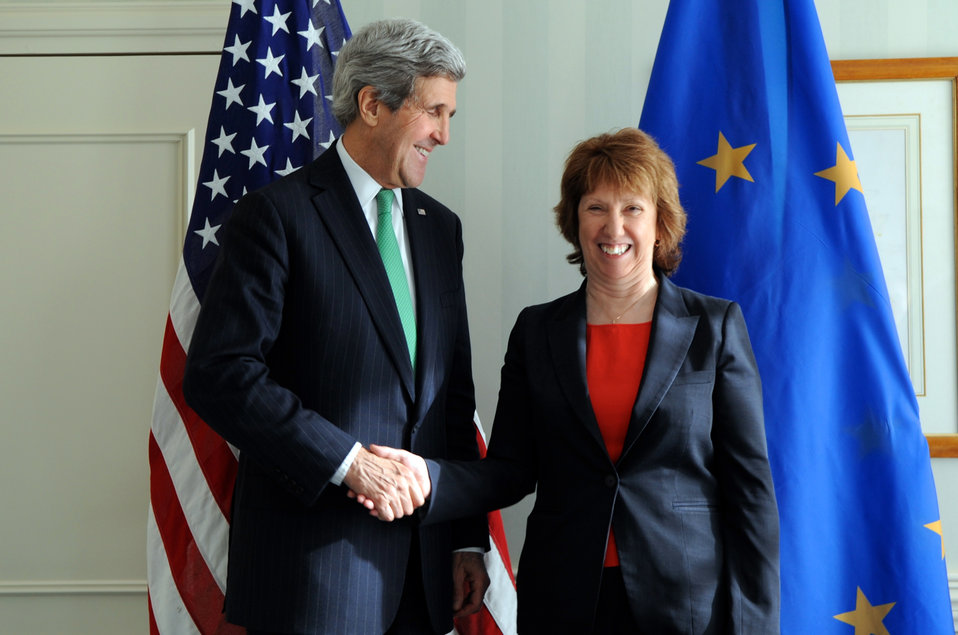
Secretary Kerry Shakes Hands With EU High Representative Ashton Before Meeting in Munich

U.S. Secretary of State John Kerry shakes hands with European Union High Representative for Foreign Affairs Catherine Ashton before a bilateral discussion on the sidelines of the Munich Security Conference in Munich, Germany, on February 1, 2014.